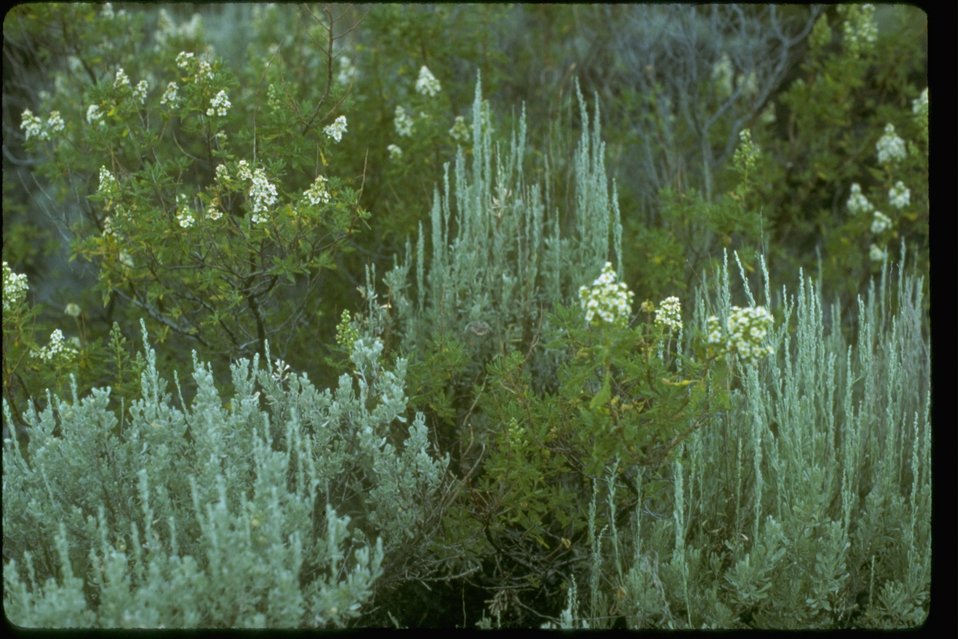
Sage and Desert Sweet Wildflowers in the Fourt Craters Lava Bed Wilderness Study Area. OR 1-22.